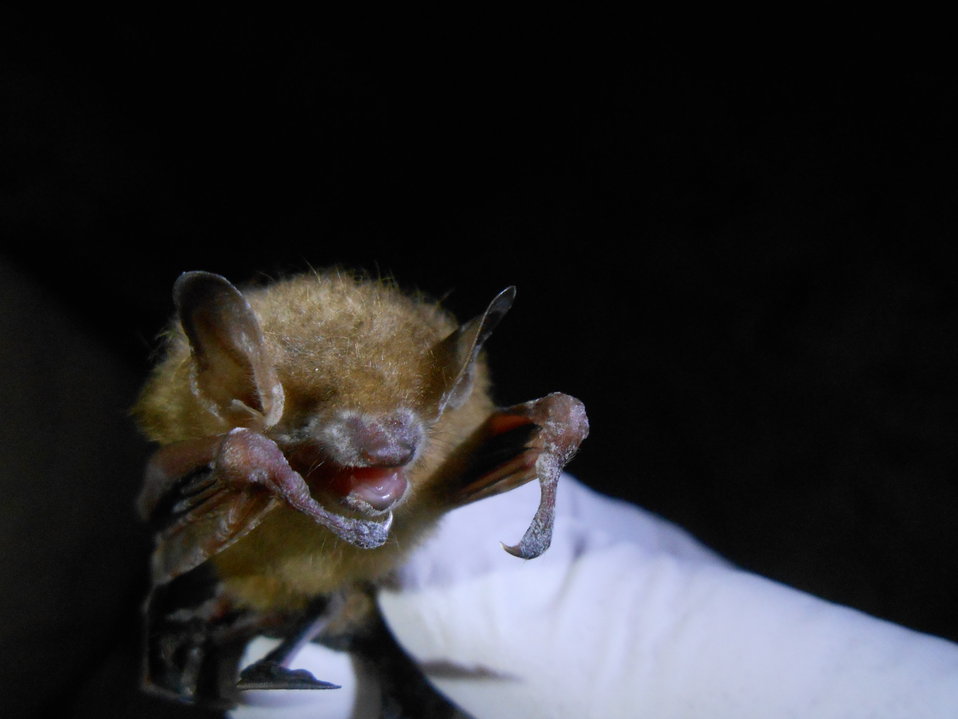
Biologist holds tri-colored bat with visible symptoms of WNS from Chickamauga and Chattanooga National Military Park, Georgia